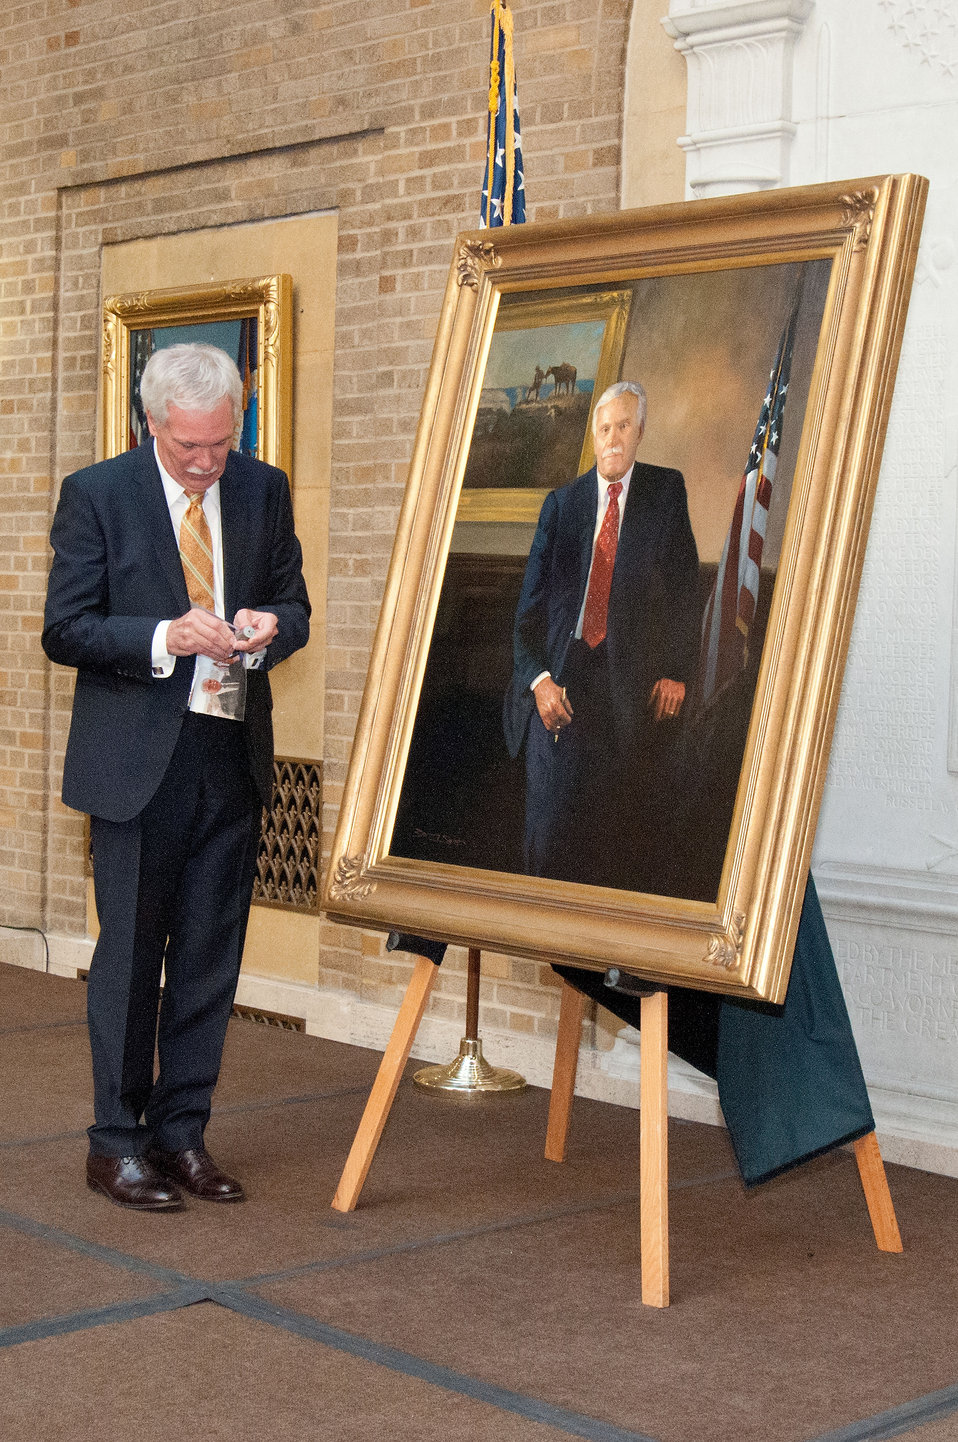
Former Agriculture Secretary Ed Schafer attaches a photograph of he and his wife taken from the Capital facing the Washington Monument to the back of his portrait after the unveiling at the United States Department of Agriculture in Washington, D.C. on , Friday, April 27, 2012.